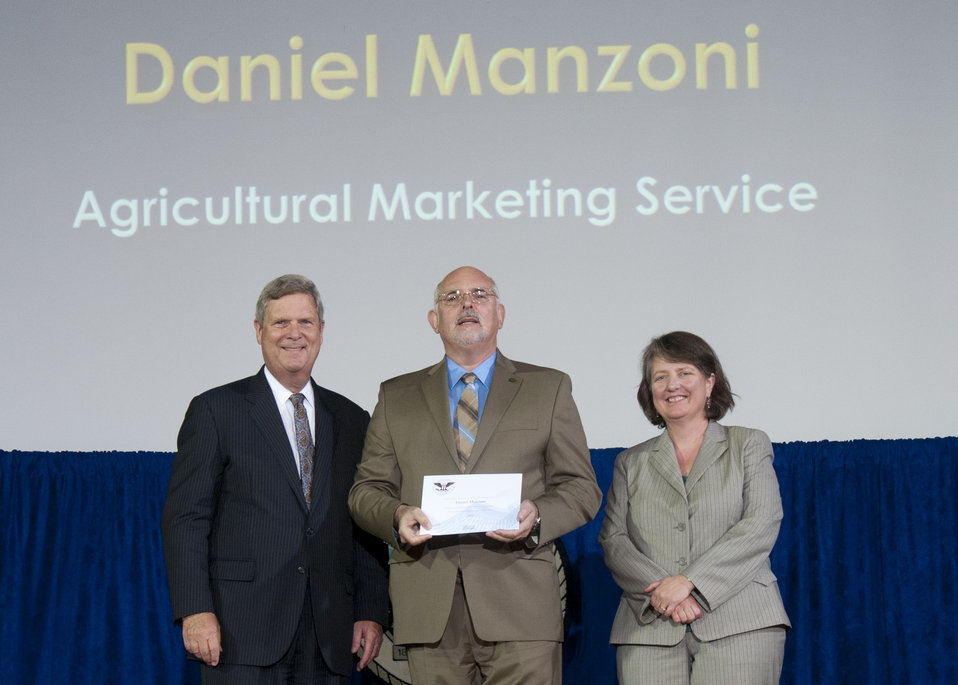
Agriculture Secretary Tom Vilsack and Agriculture Deputy Secretary Kathleen Merrigan present the President’s Call to Service Award to Agricultural Marketing Service (AMS) employee Daniel Manzoni at the U.S. Department of Agriculture (USDA) 64th Annual Honor Awards Ceremony in Washington, D.C. on Wednesday, Sept. 12, 2012. The Gold Presidential Volunteer Service Award is presented to the employee who has served 500 hours or more of service with a qualifying organization over the 12-month period beginning July 1, 2010, and ending June 30, 2011.